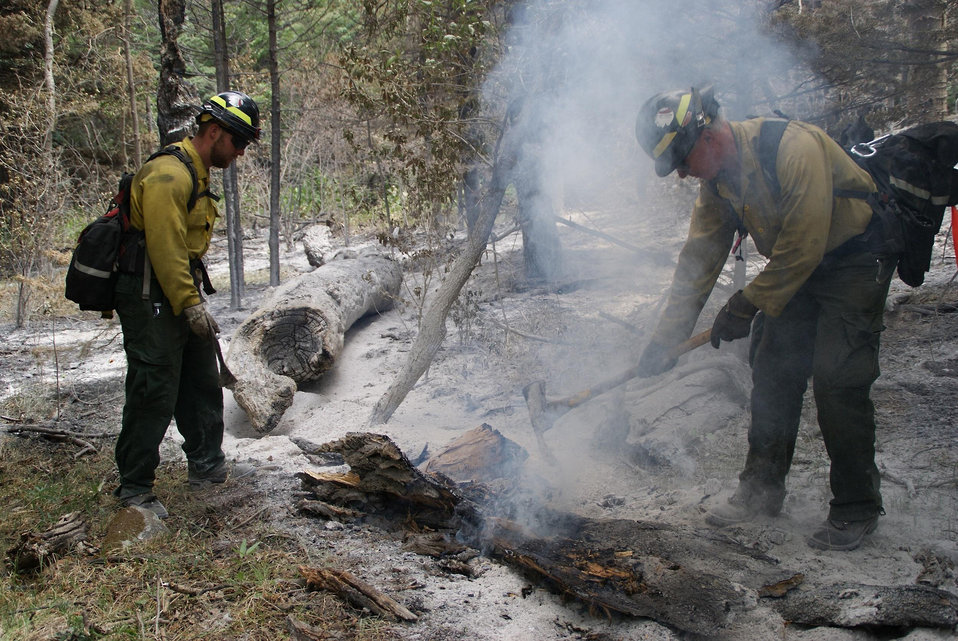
Firefighters extinguish burning embers that might restart a new blaze at the East Peak Fire near Walsenburg, CO. The East Peak Fire located approximately 10 miles southwest of Walsenburg, CO began on Jun. 19, 2013 by lightning has consumed approximately 12, 996 acres. As of Jun. 28, 2013 the fire is 85% contained with 13, 521 acres burned. Due to the steep terrain, very heavy timber and continued dry conditions, there is still a potential for spot fires and thus, the fire will not reach 100 percent containment until sufficient interior mop up is complete.